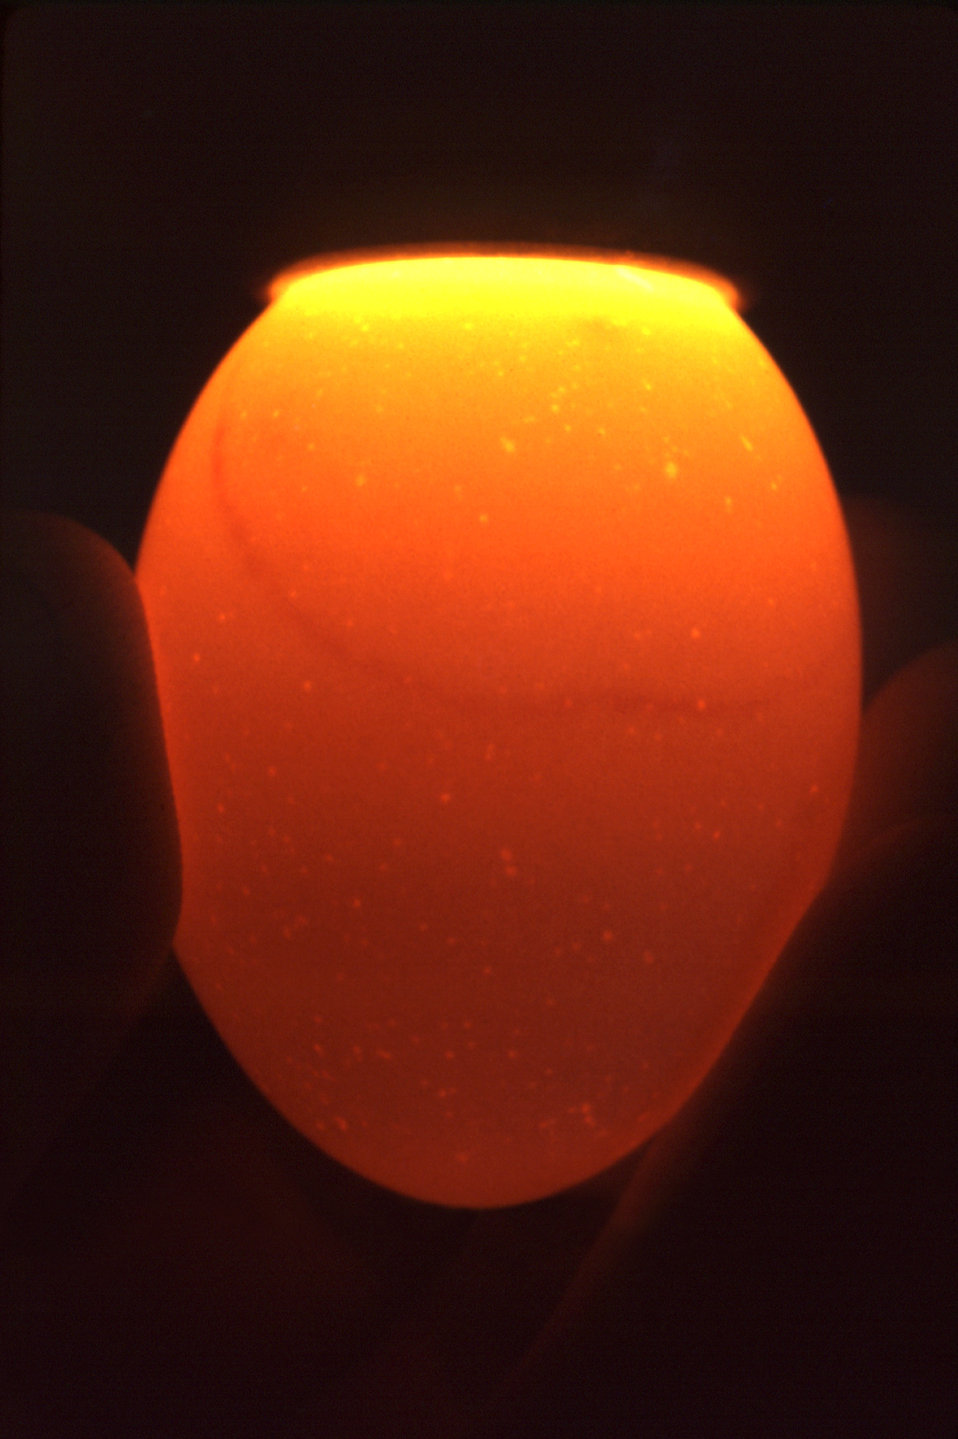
This image depicts the appearance of a non-viable, fertilized egg when observed using what is known as a 'candling' procedure. A very bright light is either placed behind the egg, such as was done throughout history by using a candle, hence the name, or employing more modern methods, using a powerful lamp placed against the broad end of the egg. In this way, the contents of the egg are revealed through the translucent shell.